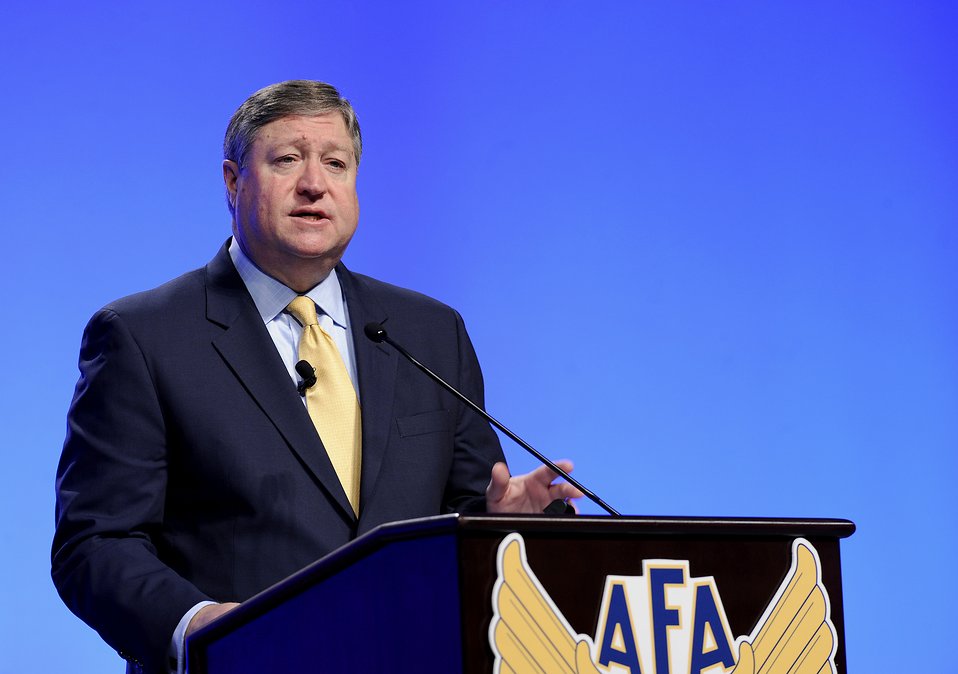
SecAF takes stock of progress, future challenges

Secretary of the Air Force Michael Donley speaks in Orlando, Fla., Feb. 18, 2011, during the Air Force Association's 27th Annual Air Warfare Symposium and Technology Exposition. Secretary Donley reviewed the Air Force's top priorities and underscored the service's commitment to making the most of available resources in a challenging fiscal environment.